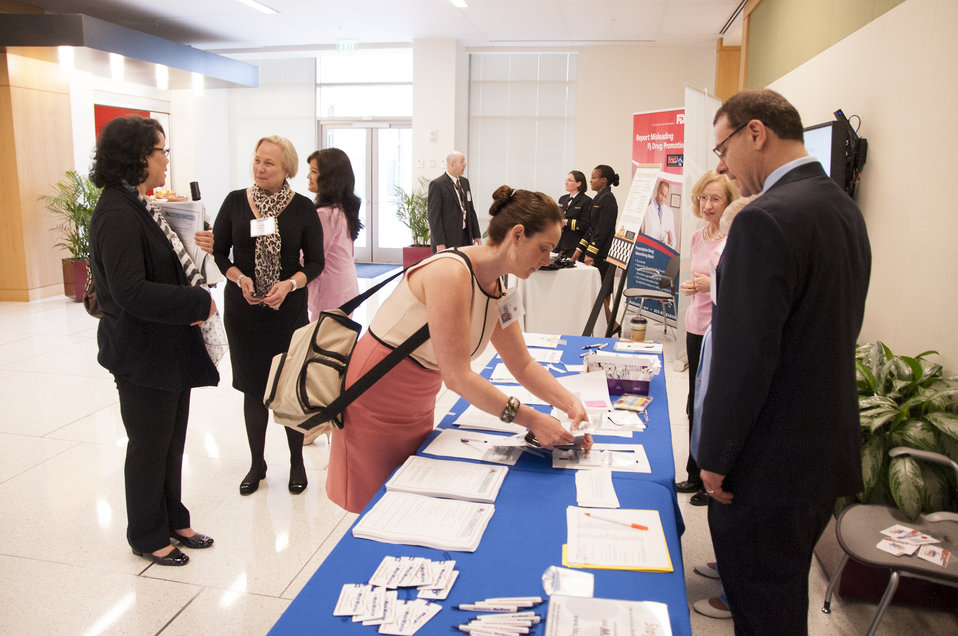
FDA's 2014 Health Professional Organizations Conference (1004)

May 14, 2014; Attendees sign in at FDA's third annual Health Professional Organizations Conference, where some of the agency’s most senior leaders exchanged views and discussed issues of mutual interest with senior representatives from key health professional organizations. To learn more, go to FDA Voice.

This photo is free of all copyright restrictions and available for use and redistribution without permission. Credit to the U.S. Food and Drug Administration is appreciated but not required.

Privacy and use information: www.flickr.com/people/fdaphotos/